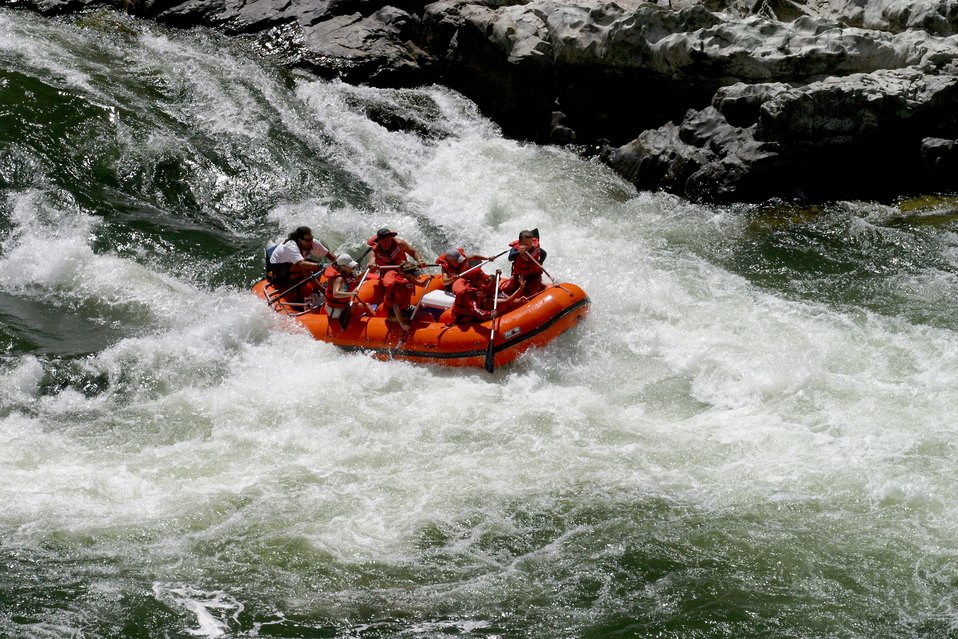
Boater at Grave Creek Falls